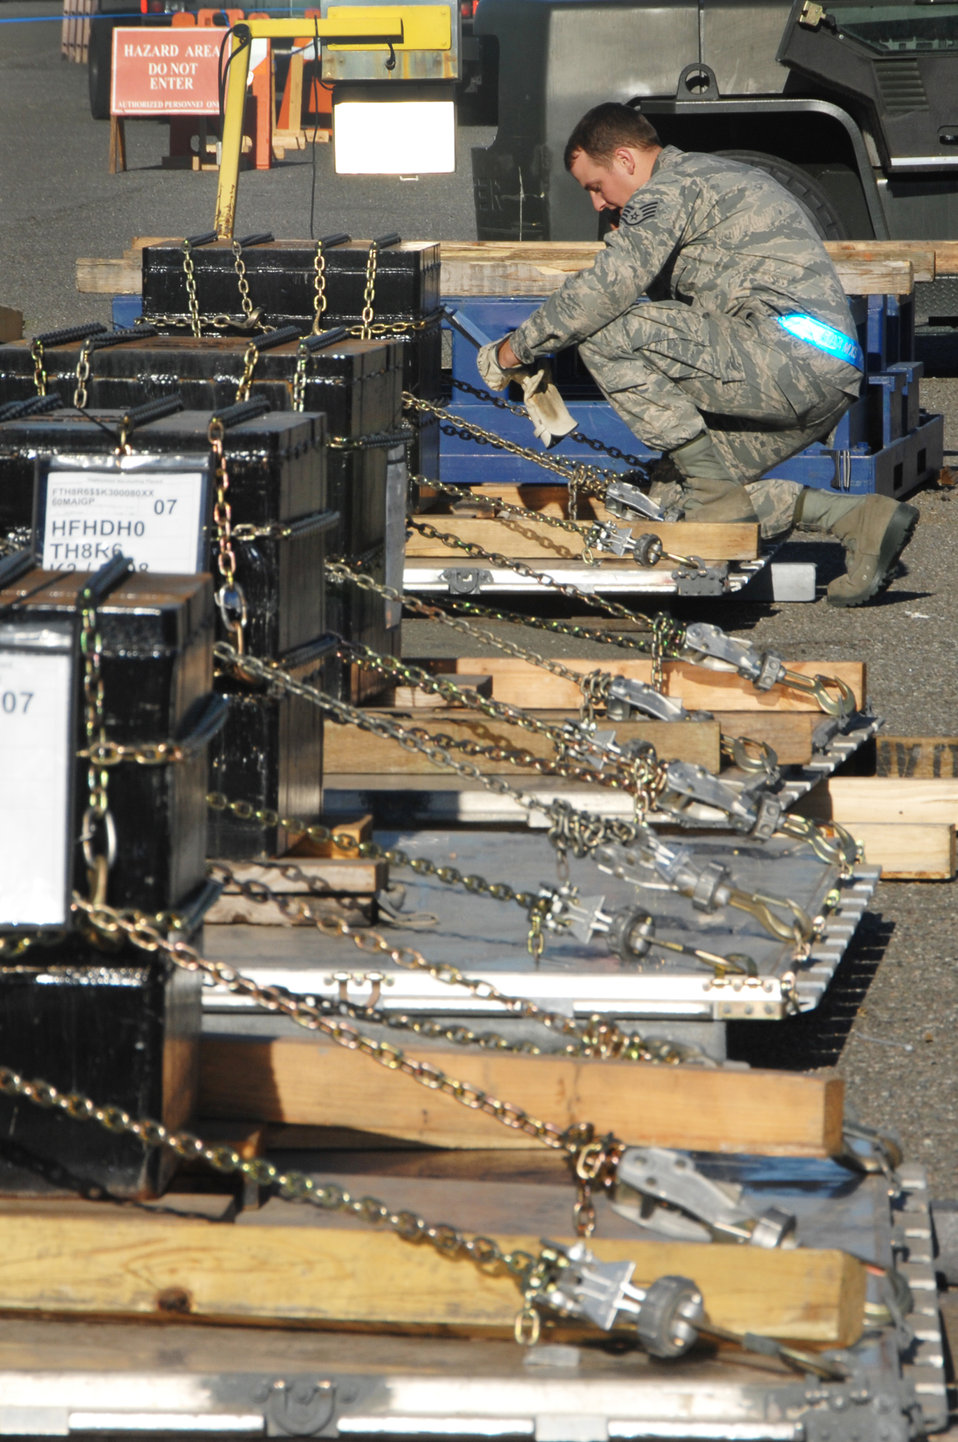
Shipping mastery

Staff Sgt. Eric Bayless, a member of the 860th Aircraft Maintenance Squadron, checks a shipping document during the operational readiness exercise at Travis Air Force Base, Calif., Nov. 2, 2010. The exercise ensures all will be prepared in the event of a short notice deployment.